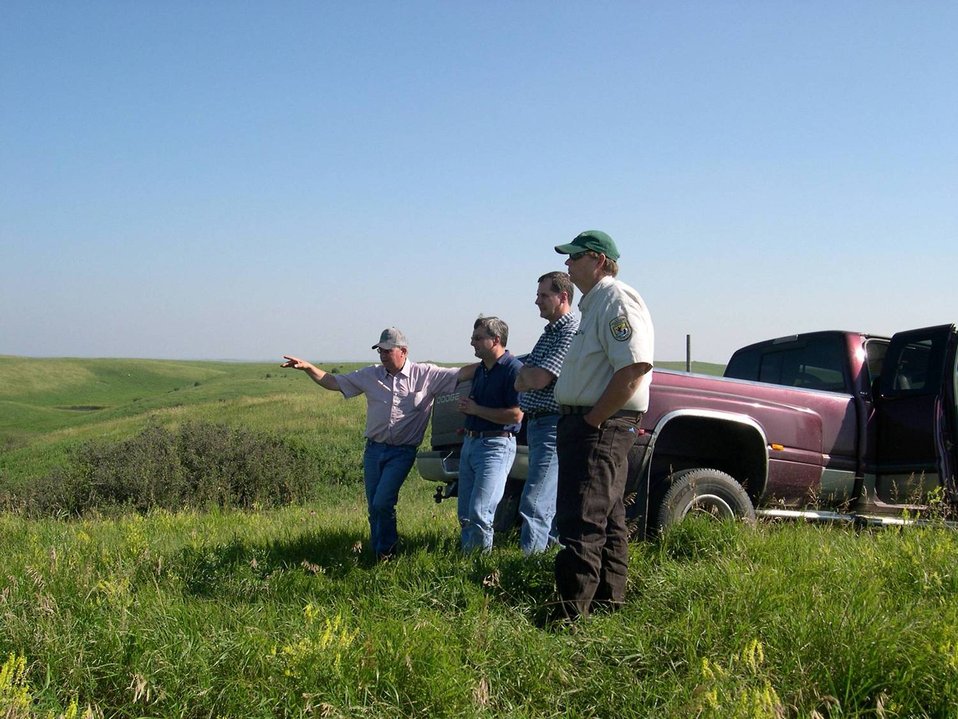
Partners for Fish and Wildlife Private Lands Project

Partners for Fish and Wildlife Program Staff meet with individual private landowners to plan and implement habitat restoration projects that benefit federal trust species beyond the borders of the National Wildlife Refuges System.